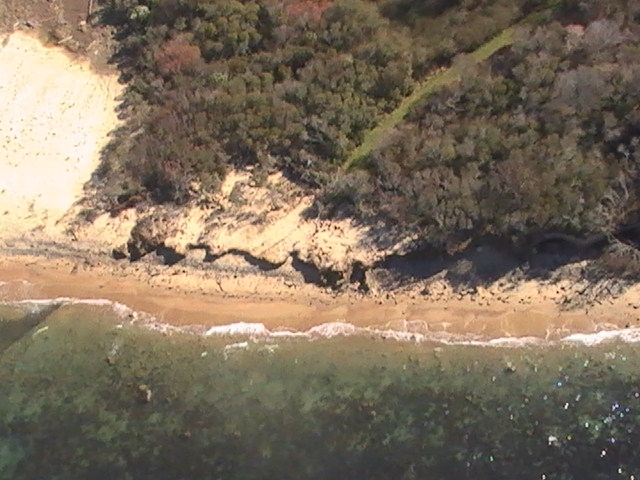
Block Island National Wildlife Refuge access road (RI)

Shoreline and access road loss on the Block Island National Wildlife Refuge.